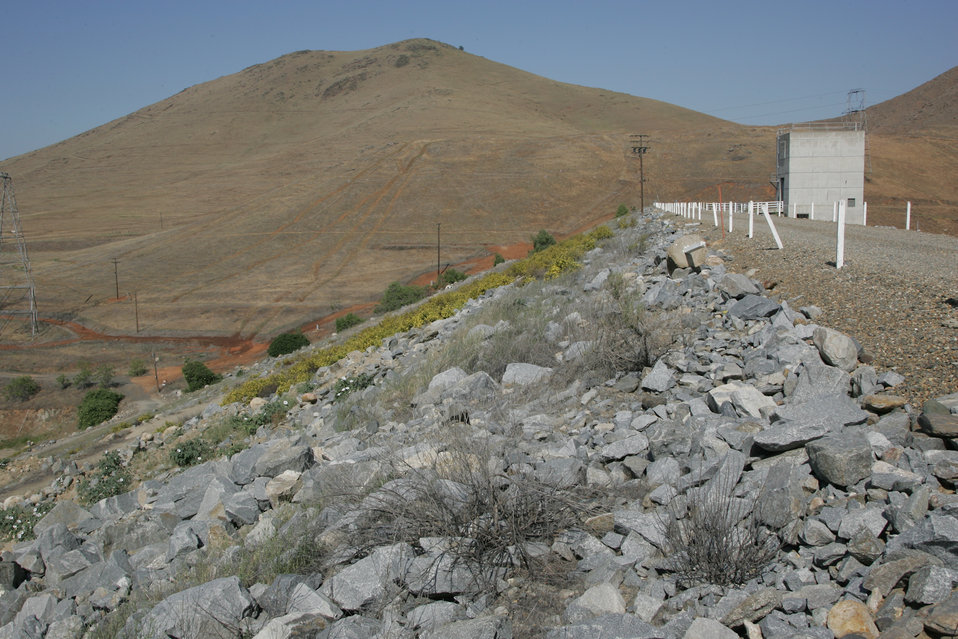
Success Dam

Looking west toward the control structure at Success Dam, located near Porterville, Calif., May 1, 2007. The U.S. Army Corps of Engineers Sacramento District completed construction of Success Dam in 1961 and the reservoir provides flood risk management, water storage and recreational benefits to the local area.